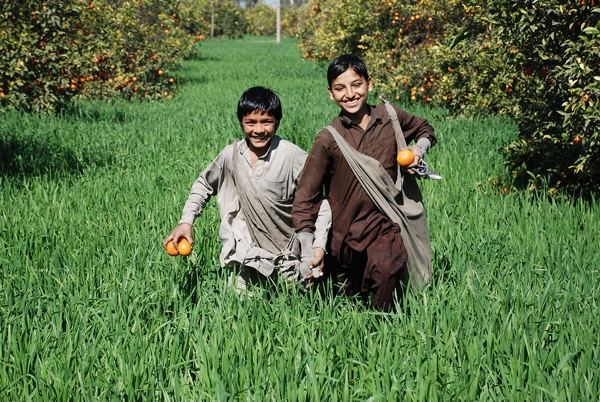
m DSC 0054